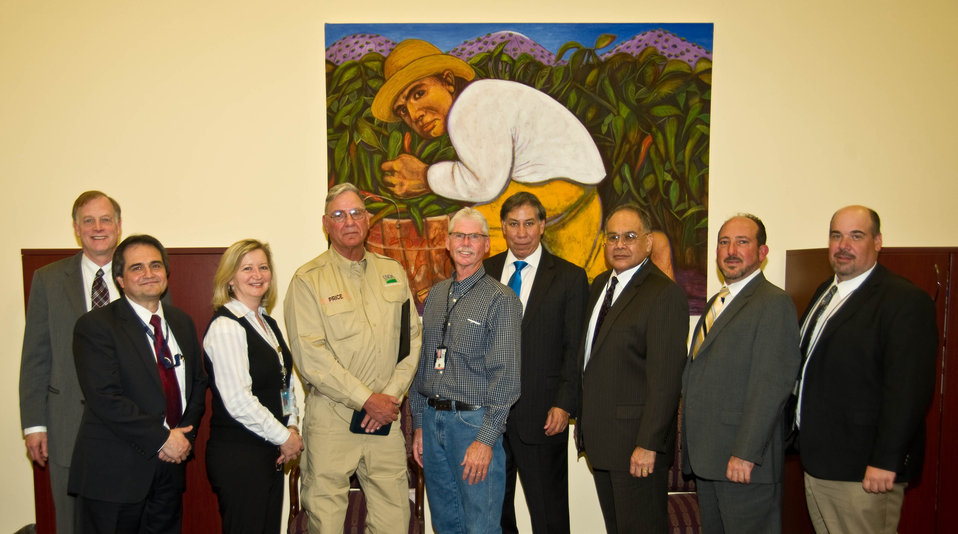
Agriculture Under Secretary for Marketing and Regulatory Programs (MRP) Edward Avalos welcomes back two U.S. Department of Agriculture (USDA) Animal and Plant health Inspection Service (APHIS) biologists from 18-week tours of duty in Afghanistan on Tuesday, Mar. 19, 2013. The biologists spent long days using their wildlife expertise to reduce aircraft hazards to American and coalition aircraft at military airbases. USDA APHIS New Mexico district supervisor Keel Price received the prestigious Award for Exemplary Civilian Service for managing a massive habitat modification project near the Kandahar Airfield. The Smithsonian’s Feather Identification Lab recognized USDA APHIS Idaho State director George Graves for his contributions of over 1,300 feather and mammal specimens to the Smithsonian. These USDA APHIS wildlife biologists have reduced damage at the warzone bases by approximately $2.6 million, decreasing wildlife strikes by about 65%. (L to R USDA APHIS Deputy Administrator Wildlife Service Bill Clay, USDA APHIS Acting Associate Administrator Peter Fernandez, Smithsonian Institution National Museum of Natural History Research Scientist and Manger in the Feather Identification Lab Carla Dove, USDA APHIS Wildlife Service Biologist New Mexico district supervisor Keel Price, USDA APHIS Wildlife Service Biologist Idaho State director George Graves, Agriculture Under Secretary MRP Edward Avalos, USDA APHIS Associate Administrator Martin Mendosa, National Coordinator Mike Begier, and USDA APHIS Wildlife Biologist Eastern Region Chris Bowser).